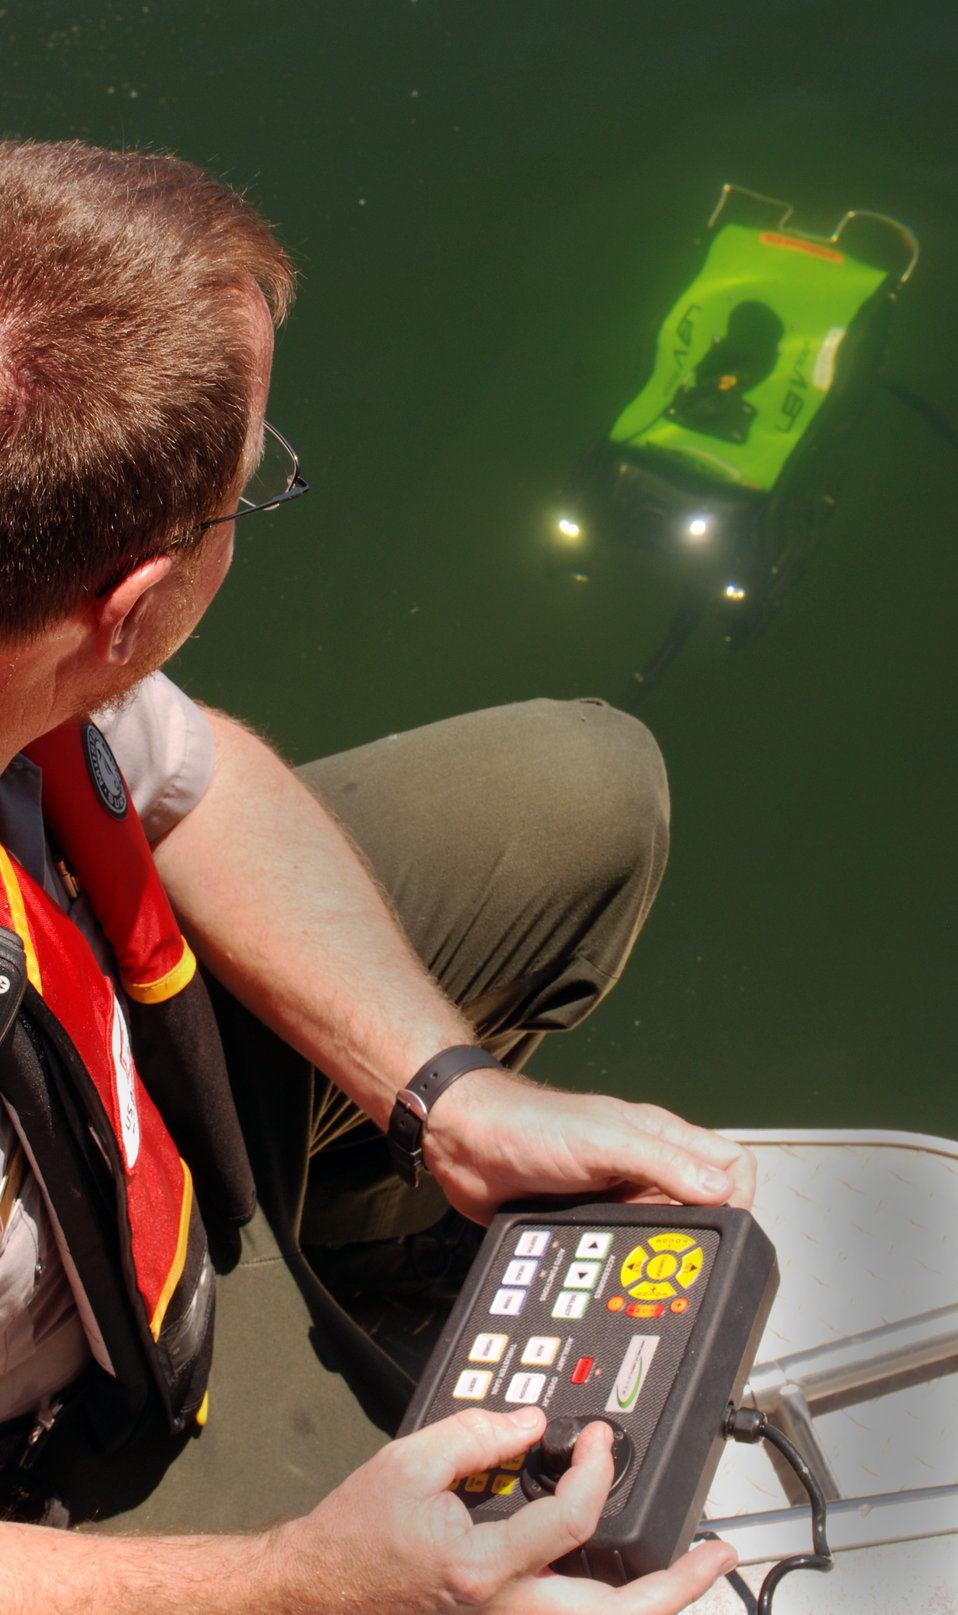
'Flying' the underwater robotic vehicle to surface near the work boat, Ranger John Chapman, U.S. Army Corps of Engineers Sacramento District, demonstrates the controls of this versatile piece of submarine video gear.